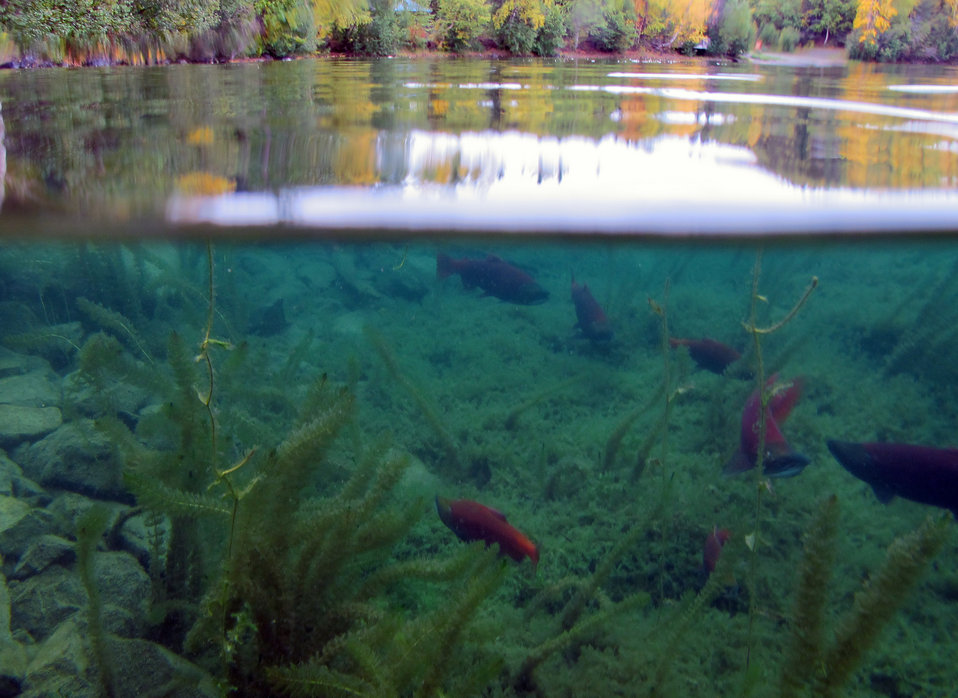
Sockeye world